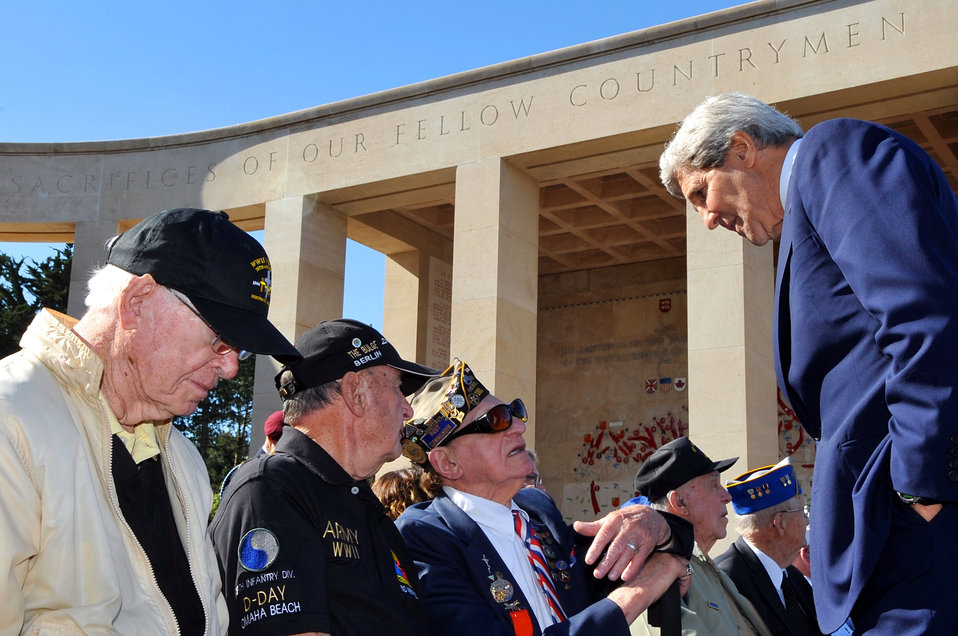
Secretary Kerry Listens as D-Day Veteran Describes Normandy Landing

U.S. Secretary of State John Kerry listens as a veteran describes the D-Day assault and serving under General George Patton before the 70th anniversary commemoration in Normandy, France, on June 6, 2014. State Department photo/ Public Domain]